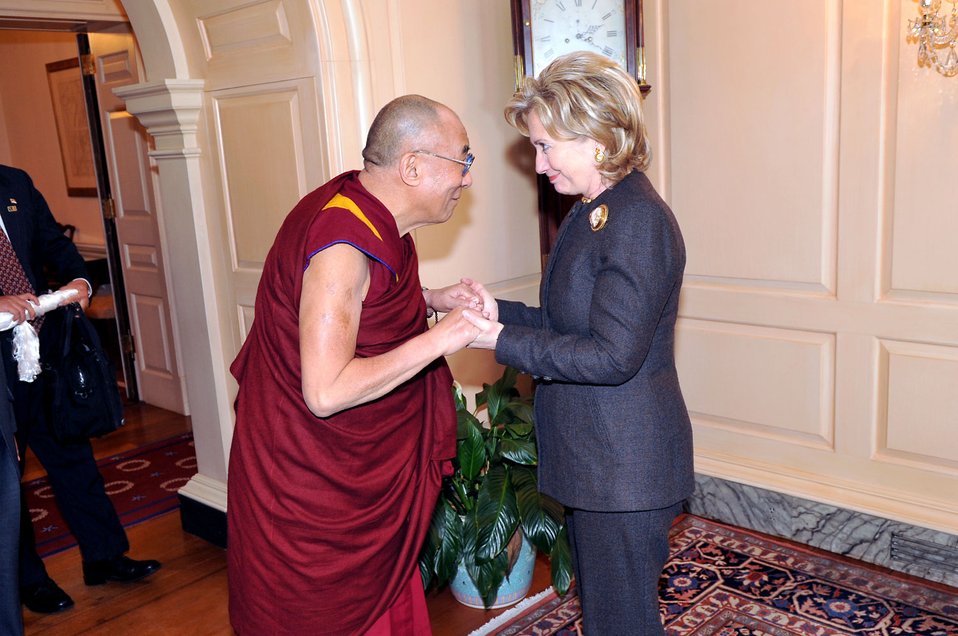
Secretary Clinton Meets With His Holiness the Dalai Lama

U.S. Secretary of State Hillary Rodham Clinton meets with His Holiness the Dalai Lama, at the Department of State in Washington, DC February 18, 2010.